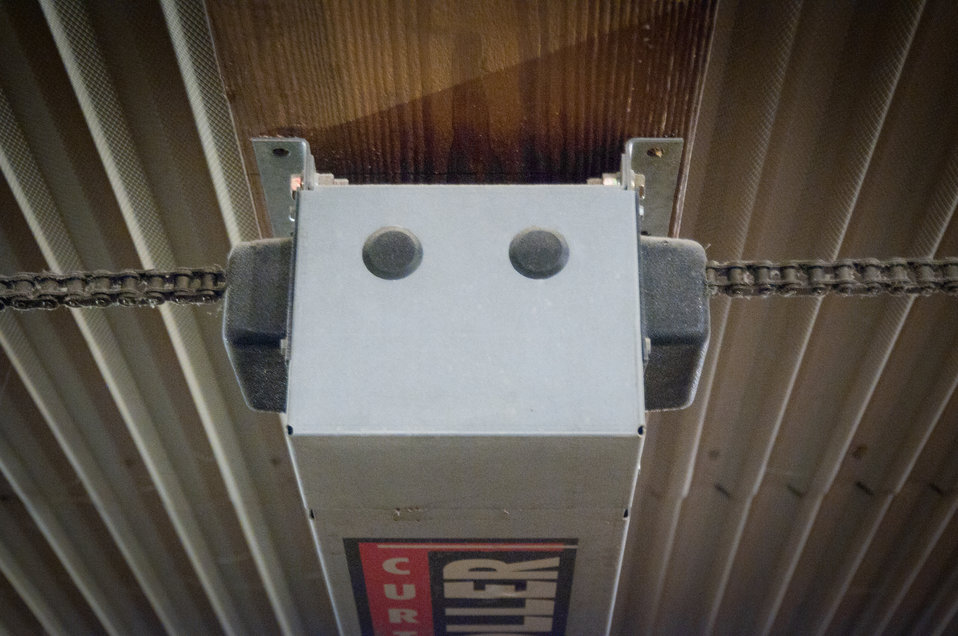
When needed, computer controlled motors (seen) pull lines to operate panels on evaporative cooler elements at the Roxanne Molnar Farm on Thursday, April 21, 2011, in Grantville, PA. Roxanne and Matthew Molnar have an 80,000 poultry farm and were recipients of a $20,000 Rural Energy for America Program (REAP) grant. The money is a portion of the cost to modernize the second of two 40,000 chicken capacity chicken houses. Chickens need to be kept at a comfortable temperature to remain productive. New radiant heaters keep the chickens warm during Pennsylvania winters. On warm days, ceiling vents provide passive venting of heat out of the building; when chicken house temperatures are estimated to be above 90 degrees, fans come on, pulling air through water evaporator elements lowering air temperature down 10-15 degrees and flows along the chicken house's length, in effect a tunnel of cooled air. The benefits to the chickens are heat and excess moisture removal; minimized dust and odor; limits buildup of ammonia and carbon dioxide; and provides oxygen for respiration. All these systems are computer controlled allowing owner, Roxanne Molnar to run the farm by herself and raise two small boys Gavin (2) and Grant (5). Husband, Matthew works off the farm and frequently travels, so along with the demands of parenting and manually controlling fans, vents, and having to remove the 80,000 chickens from their feeders and moving them around to cool them was an increasingly daunting task. The computer controls of the new system automate many of the daylong tasks allowing the Molnar’s to run their family farm. USDA Photography by Lance Cheung.